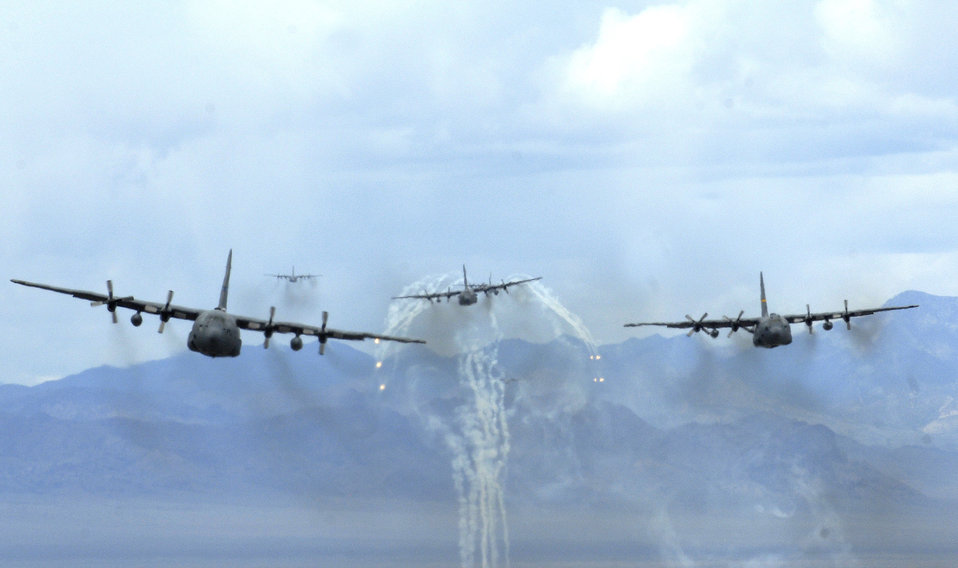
Herculean task

A formation of C-130 Hercules flies May 18, 2011, above the Nevada Test and Training Range, during an exercise.